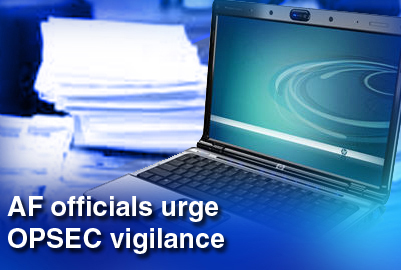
OPSEC vigilance